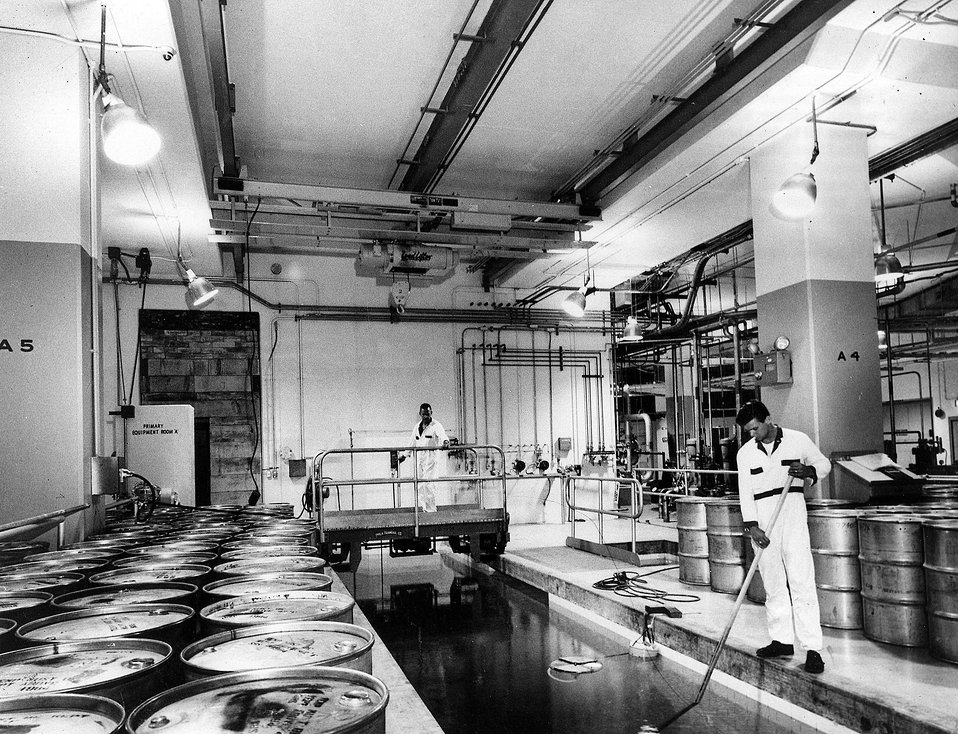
The fuel canal, located on the lowest floor of the High Flux Beam Reactor building, in which spent fuel elements will be stored and then loaded into shielded containers for shipment to an offsite processing plant. c. 1965